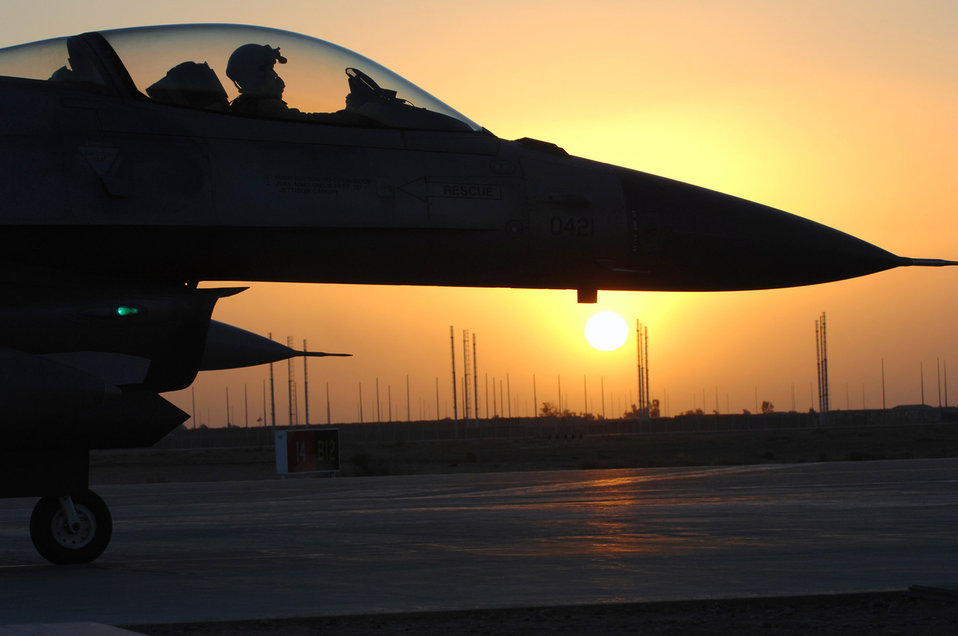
Here comes the sun...

Lt. Col Geoffrey Maki waits to depart Balad Air Base, Iraq, on a mission supporting Operation Iraqi Freedom. He is a pilot with the 23rd Expeditionary Fighter Squadron, and deployed from Spangdahlem Air Base, Germany.